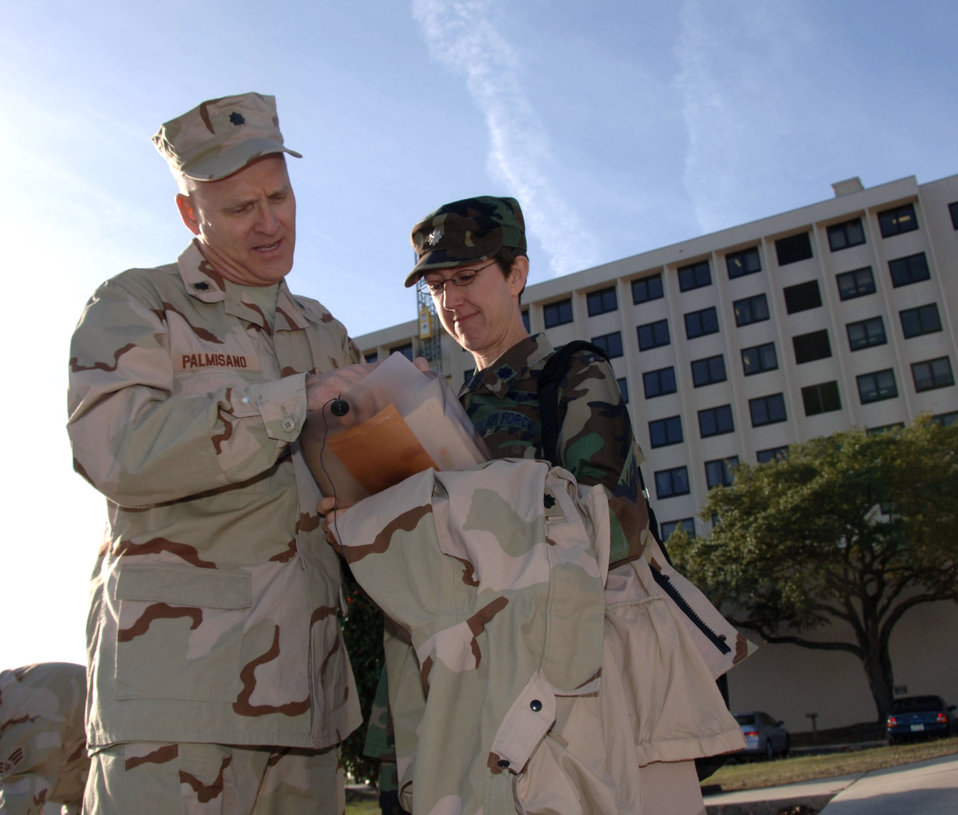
Wilford Hall medics depart for Iraq

Lt. Col. Frank Palmisano goes through deployment paperwork with his wife, Lt. Col. Jane Palmisano outside Wilford Hall with more than 60 other 59th Medical Wing Airmen Jan. 9 as he prepares to depart Lackland Air Force Base, Texas. Colonel Palmisano is the 59th Diagnostics and Therapeutics Group administrator and will serve as director of operations at the Balad Air Base hospital in Iraq. His wife is from the 859th Medical Operations Squadron.